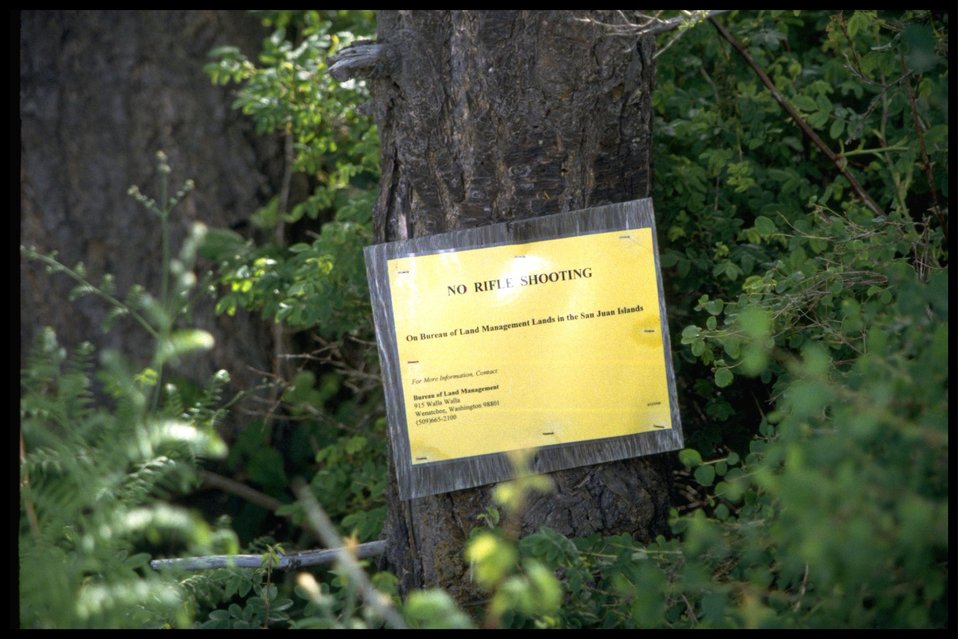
A "No Rifle Shooting" sign near the Chadwick Hill Marsh.